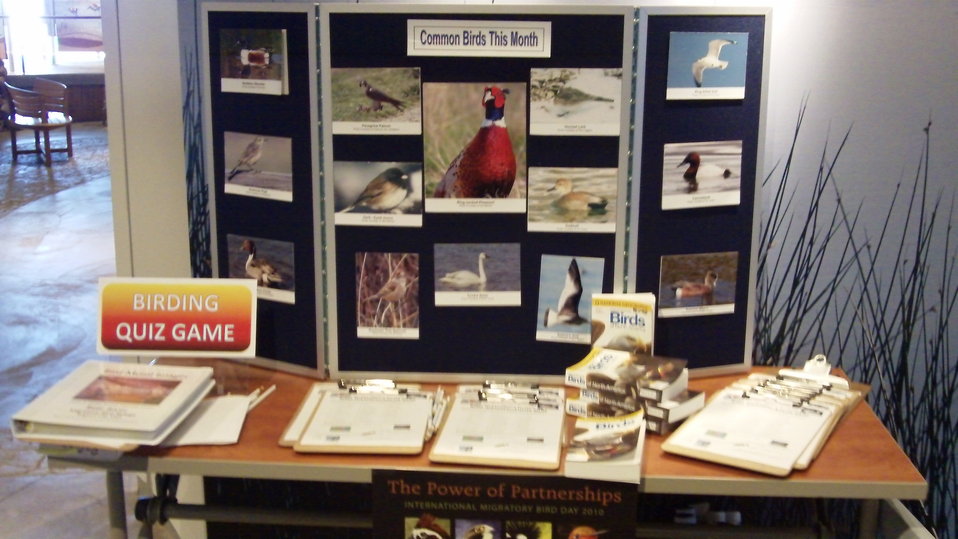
Bird Quiz Game for Families

One of the fun things to do at Bear River Migratory Bird Refuge - rain or shine - is to take the family fun Bird ID quiz in our exhibit hall.